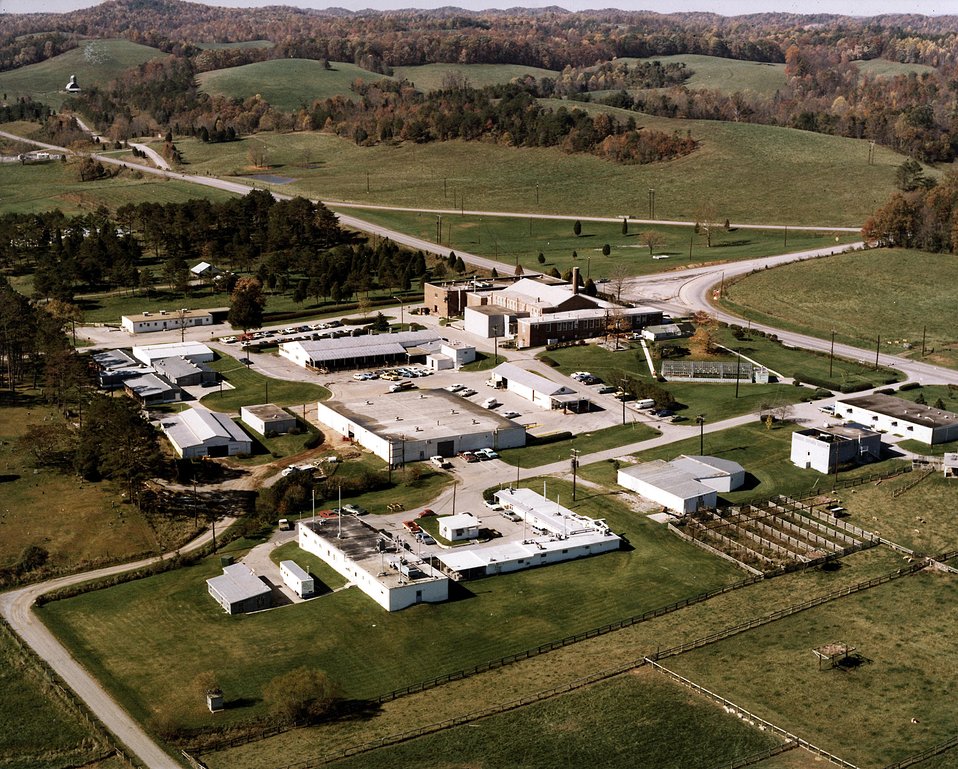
The Comparative Animal Research Laboratory (CARL) is operated for the Energy Research and Development Administration by the University of Tennessee. c. 1975